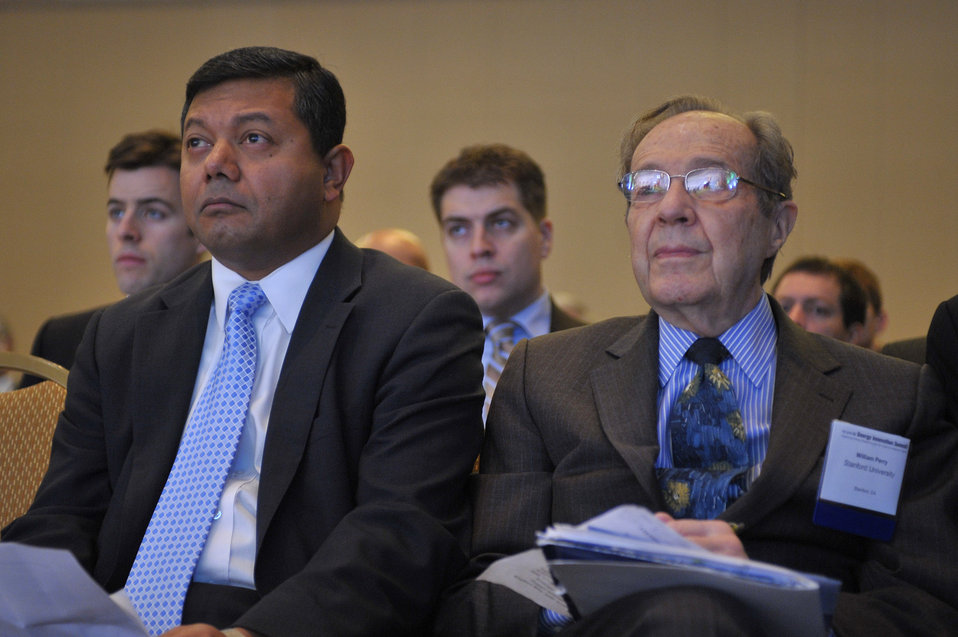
ARPA-E Energy Innovation Summit 2011, 62 of 83

Dr. Arun Majumdar, Director ARPA-E, and William Perry Ph.D, Standford Professor and Former Secretary of Defense.